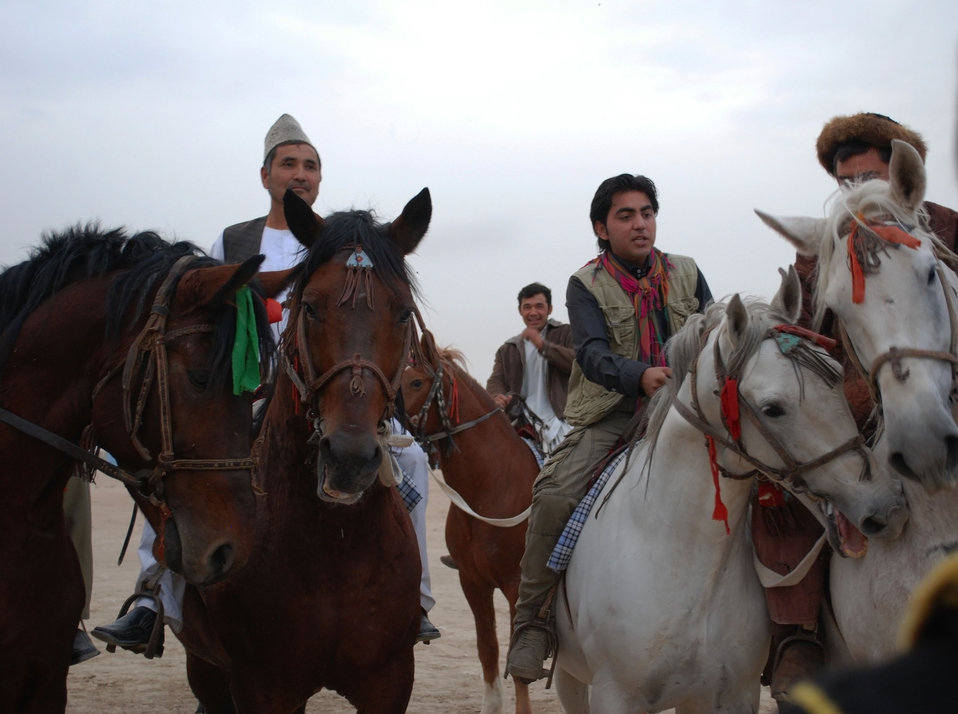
'On the Road' in Balkh Province